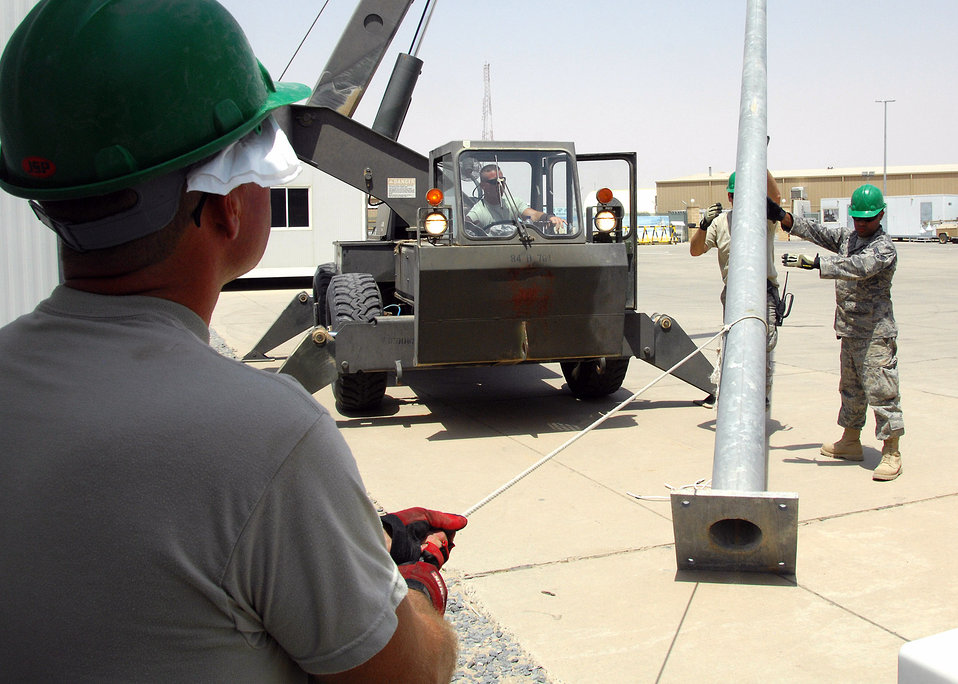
Keeping the lights on

Staff Sgt. Ricky Clark steadies a support cable while Master Sgt. Steven Gaskill (left) and Senior Airman Jose Lozadacosme stabilize a light pole while it's secured to a permanent base Aug. 23 at an air base in Southwest Asia. The Airmen, assigned to the 386th Expeditionary Civil Engineer Squadron, are installing new light poles in the South Korean air force compound to replace wind-damaged poles. The installation was a joint effort between U.S. and South Korean Airmen.